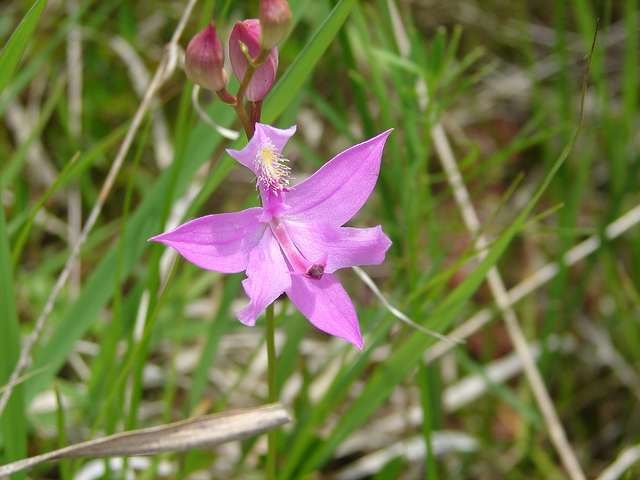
grass pink

Necedah National Wildlife Refuge